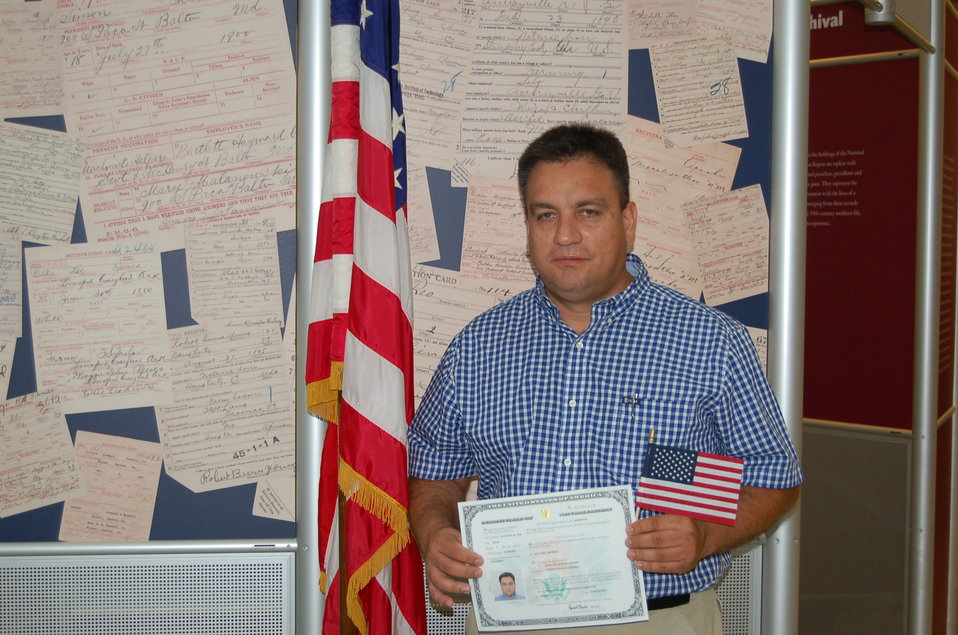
New Citizens